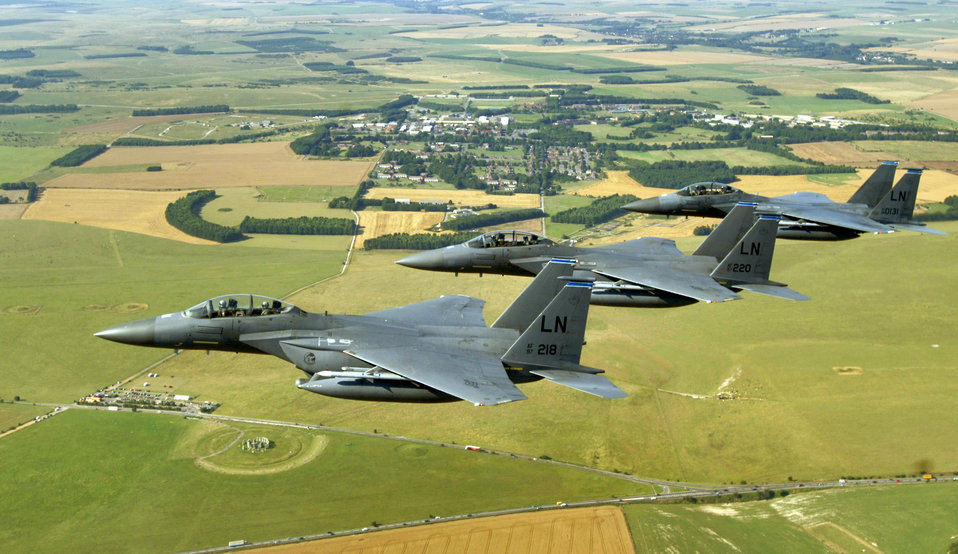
Following a flight of Eagles

A trio of F-15E Strike Eagles from the 492nd Fighter Squadron at Royal Air Force Lakenheath, England, flies past Stonehenge on Thursday, Aug. 3. The fighters were on their way to an area off the southwestern coast of England to practice basic surface attack techniques.